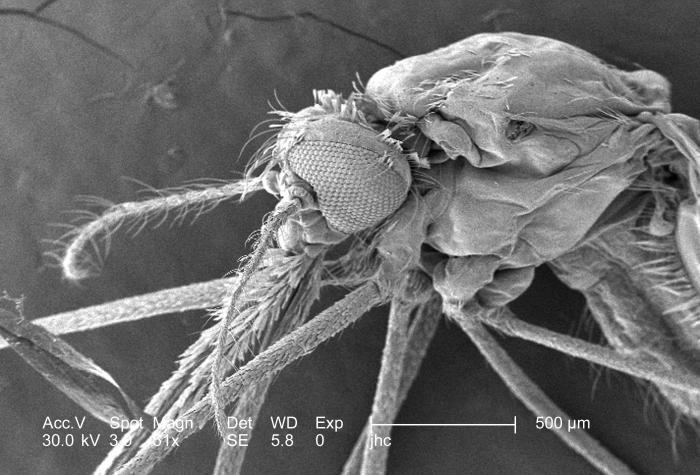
At a low magnification of 51x, this 2006 scanning electron micrograph (SEM) depicted some of the ultrastructural morphologic surface features of the head, and thoracic regions of an Anopheles gambiae mosquito. There are approximately 3,500 species of mosquitoes grouped into 41 genera. Human malaria is transmitted only by females of the genus Anopheles. Of the approximately 430 Anopheles species, only 30-40 transmit malaria in nature. An organism that transmits a disease to another organism is known as a "vector".Note the "compound eye", composed of numerous "ommatidia", which are the small subunits that act in concert with one another to provide a comprehensive mosaic image to the organism of its surroundings.